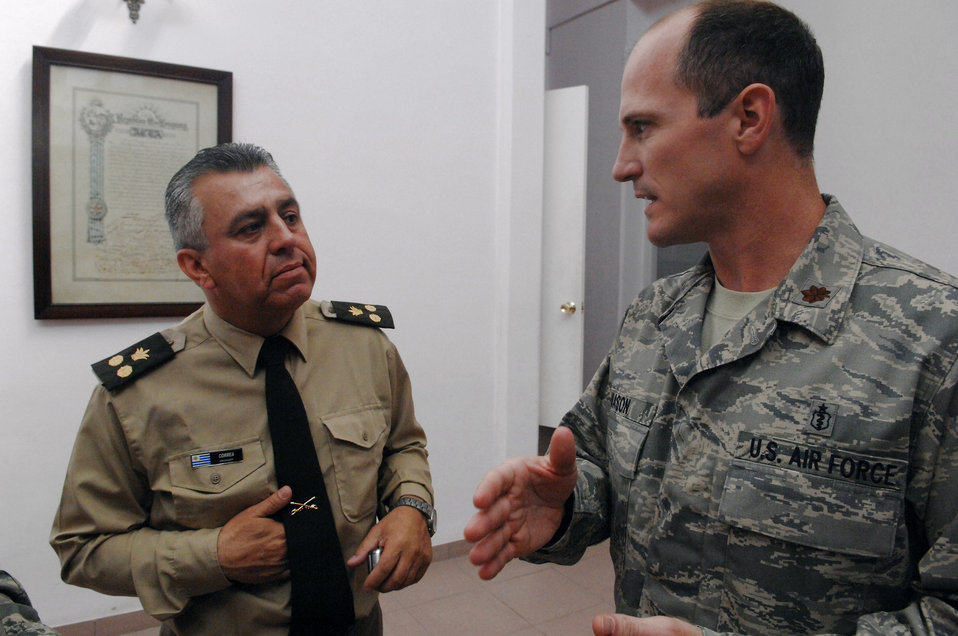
Forces combine to share disaster response techniques

Maj. Phillip Mason talks with a Uruguayan army doctor Nov. 3 in Uruguay. Major Mason is from Wright-Patterson Air Force Base, Ohio.